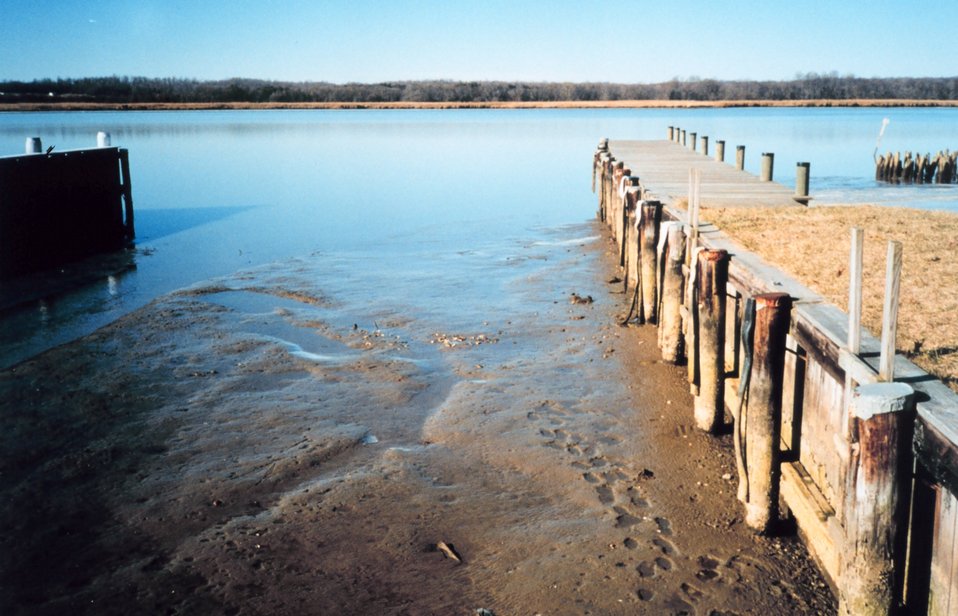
A winter extreme low tide